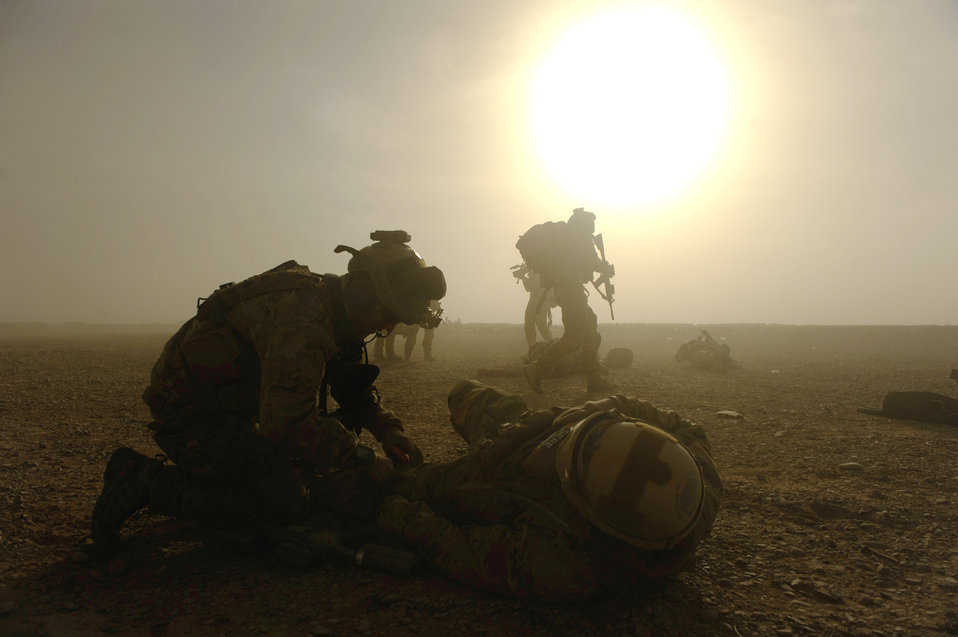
Kandahar Airmen practice evacuation skills

Pararescuemen respond to a simulated 'mass casualty' scenario near Kandahar, Afghanistan, Dec. 24, 2010. The Airmen are assigned to 46th Expeditionary Rescue Squadron.